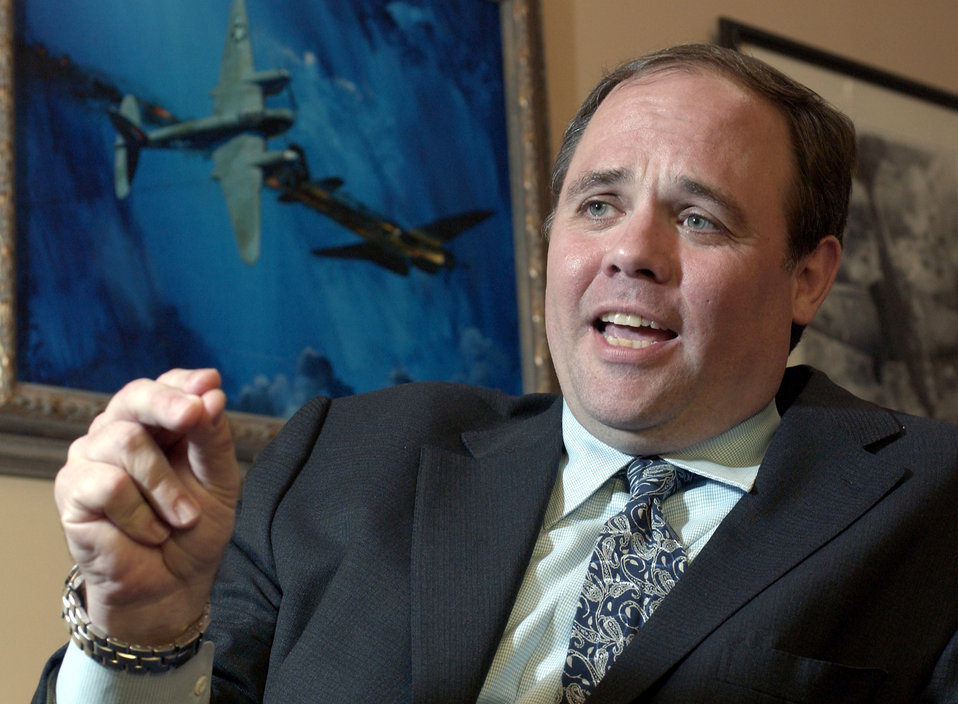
Bodie leaves Air Force

WASHINGTON -- William C. Bodie, the Air Force's first director of communications, talks about strategic communications initiatives that have taken place during his three-year tenure here. Mr. Bodie will leave in mid-May to assume a position with a Washington-area national security consulting firm.